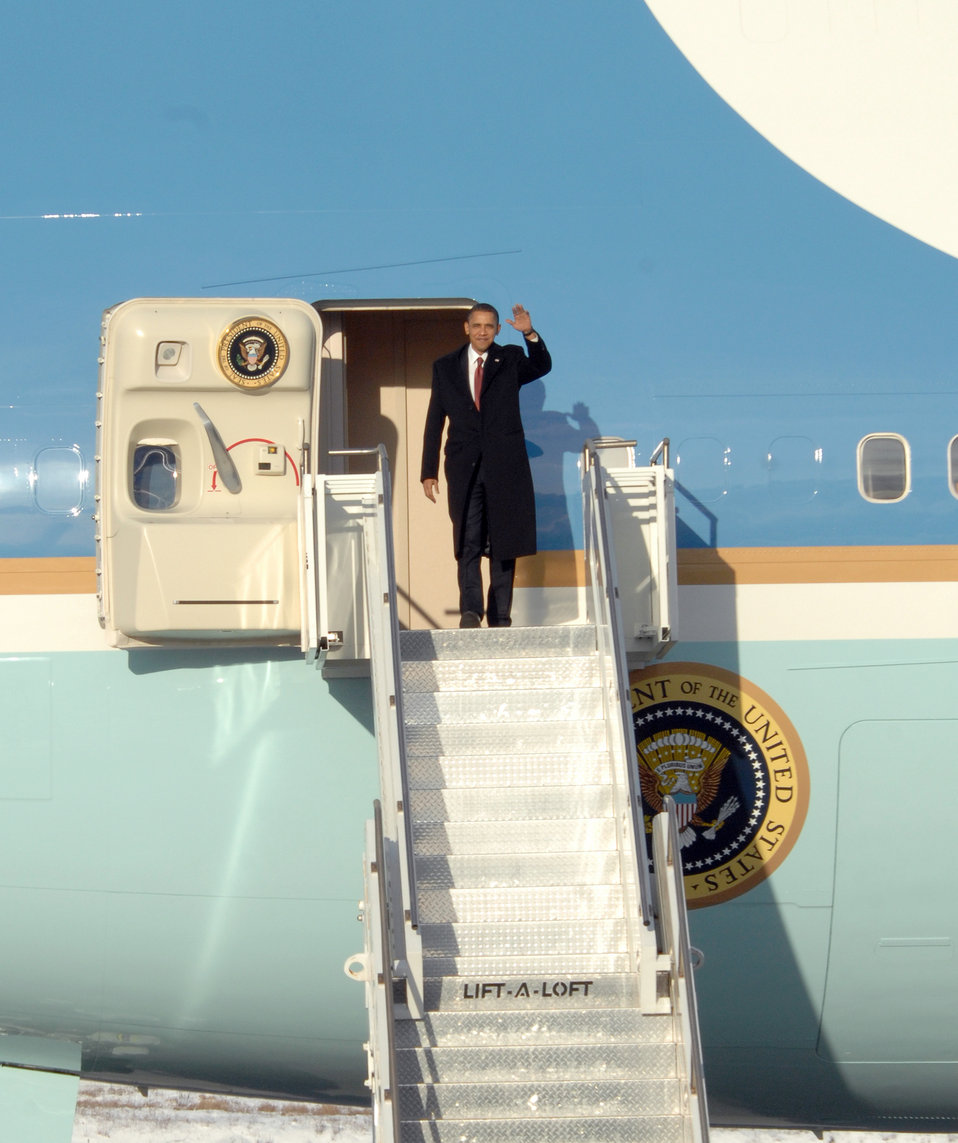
President visits Elmendorf Airmen

President Barack Obama departs Air Force One Nov. 12, 2009, at Elmendorf Air Force Base, Alaska. The president was at the base to meet with servicemembers and offer remarks to the local community.